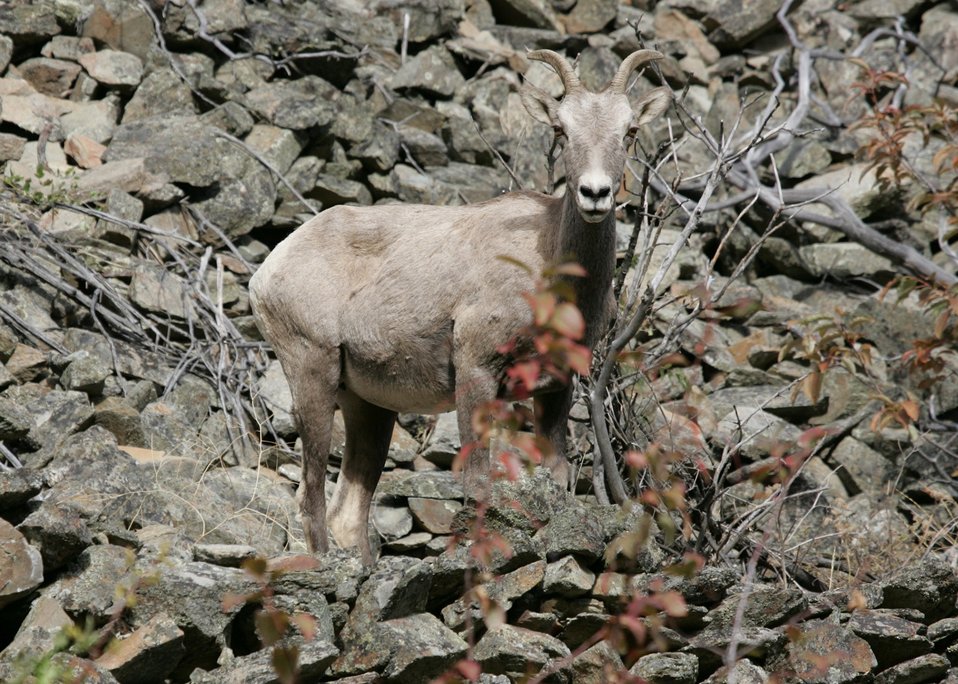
Bighorn sheep in the Connor Creek watershed in eastern Oregon.